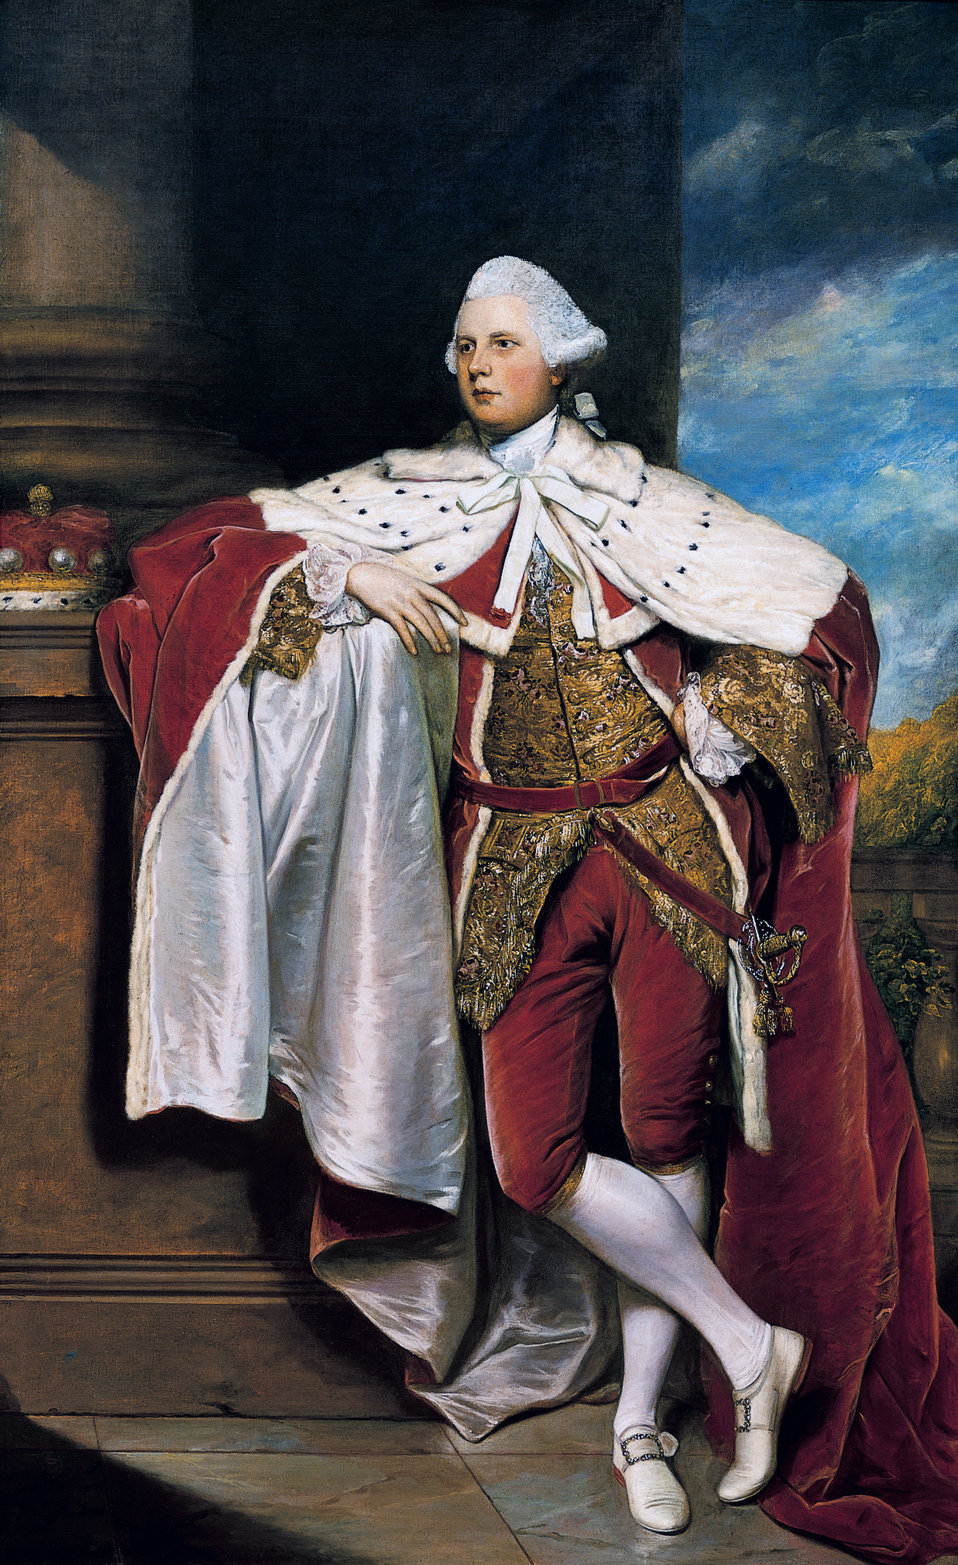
8thLordArundellOfWardour